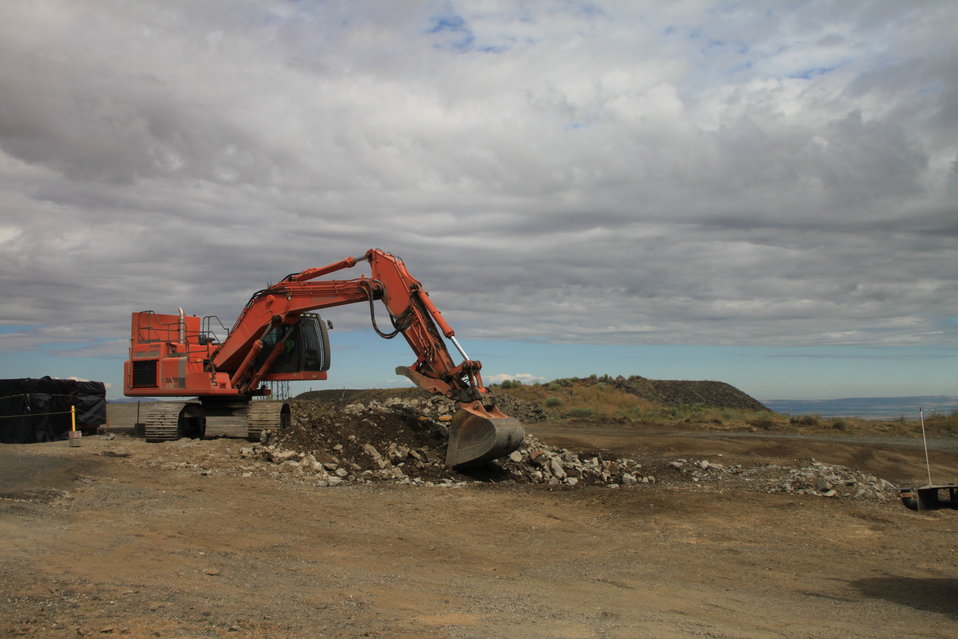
Stimulus funds cleanup of historical mountaintop at Hanford

The 6652-C Space Science Laboratory after demolition atop Rattlesnake Mountain at Hanford’s Arid Lands Ecology Reserve in Washington State. Over the years, the reserve supported various missions including anti-aircraft defense for the U.S. Army, telephone and radio communications, and wildlife reserve and environmental research.